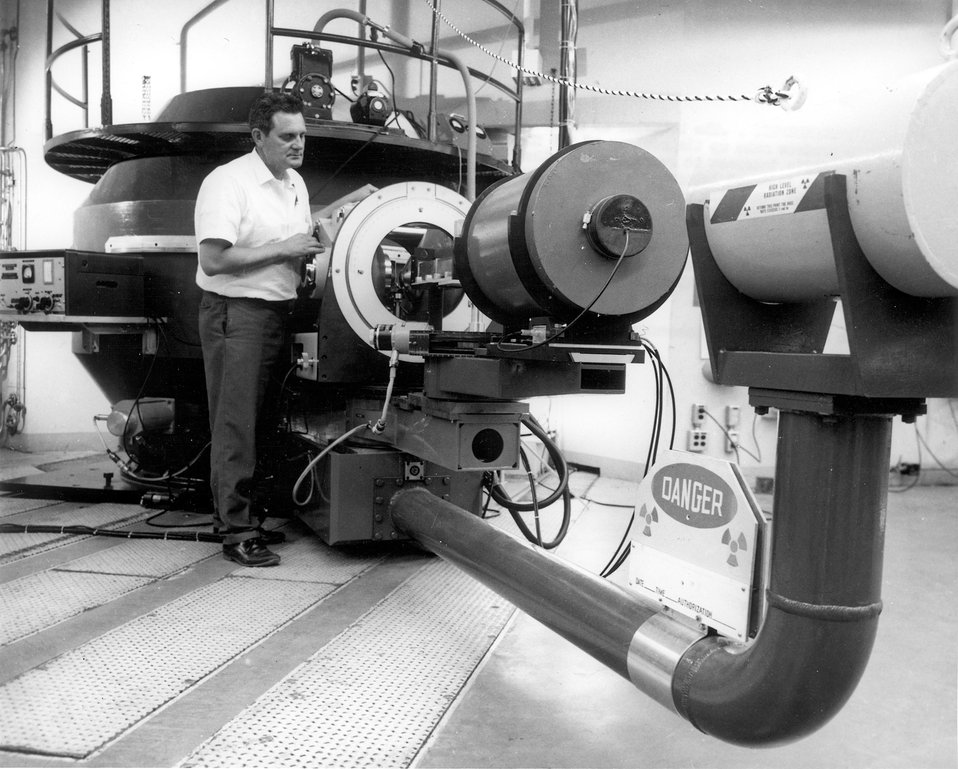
The behavior of neutrons, which with protons make up the nucleus of the atom, are of scientific interest to researchers at the AEC's Oak Ridge National Laboratory. c. 1968